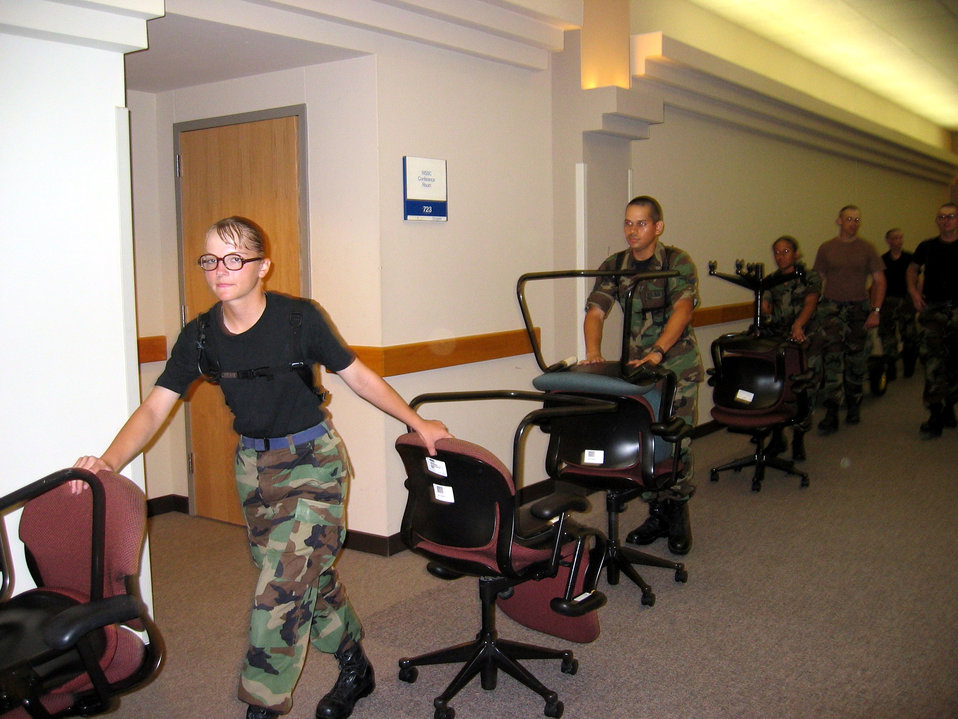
Lackland Airmen turn office areas into living spaces

SAN ANTONIO -- Airmen from nearby Lackland Air Force Base move office furniture to make room for people displaced by Hurricane Katrina. In all, 200 Airmen helped tear down modular office furniture in a 350,000 square foot building and set up the cots.